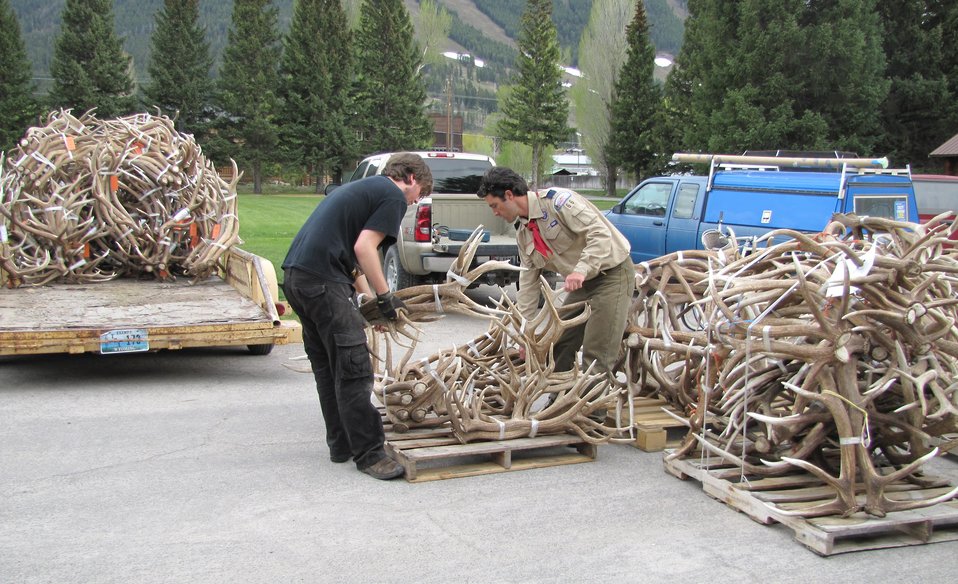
Collecting the Prepared Antlers

After the antlers are sorted, bundled, weighed, and tagged, they are stored on pallets and trailers to be transported to Jackson, Wyoming's Town Square on the morning of the antler auction. Volunteers begin as early as 5:00 a.m., taking the antlers to the auction site and laying them out for perspective bidders to begin viewing at 7:00 a.m. The auction, held the Saturday before Memorial Day weekend, begins at 10:00 a.m.